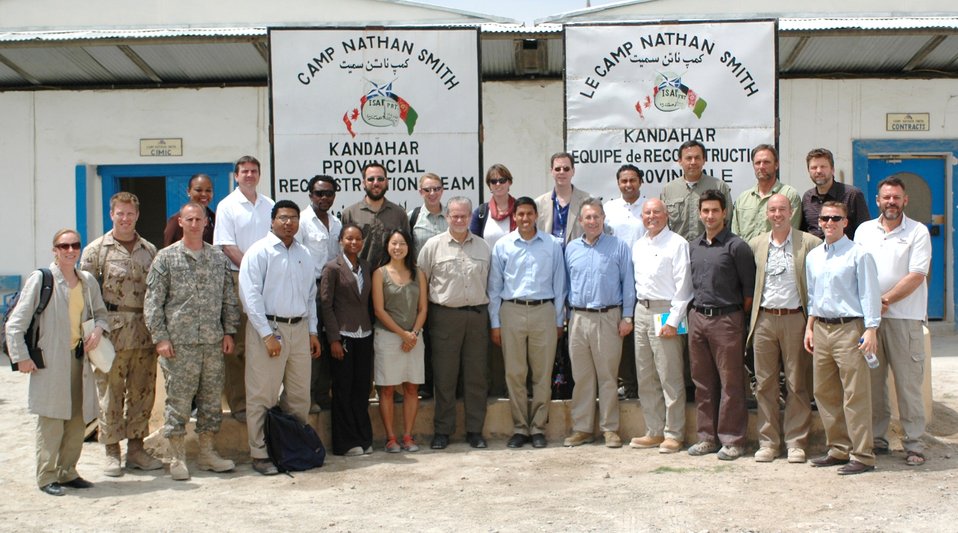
Dr Shah Visits Kandahar April 9, 2010